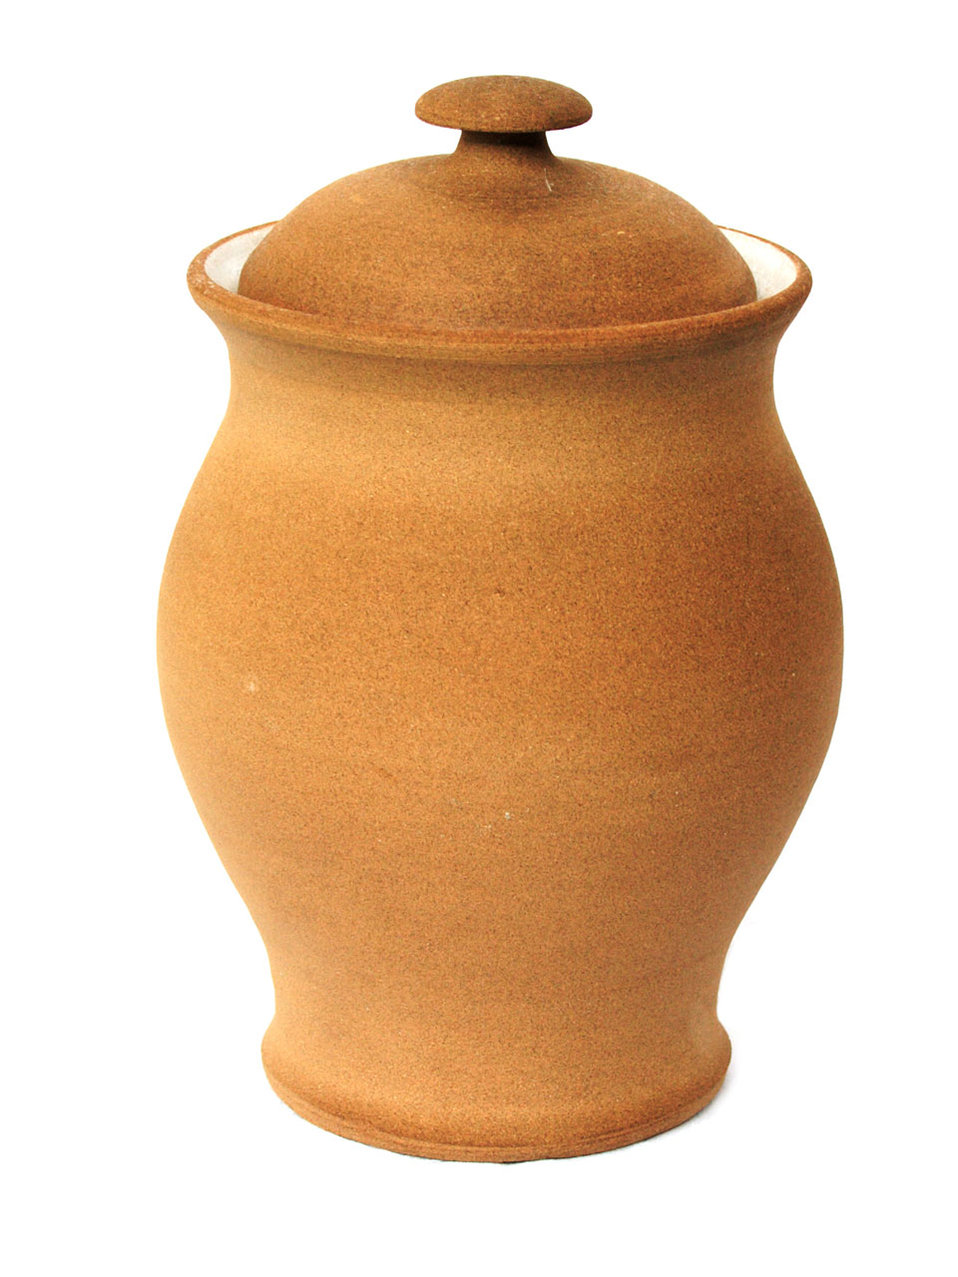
Crock

Ceramic pot on white background.